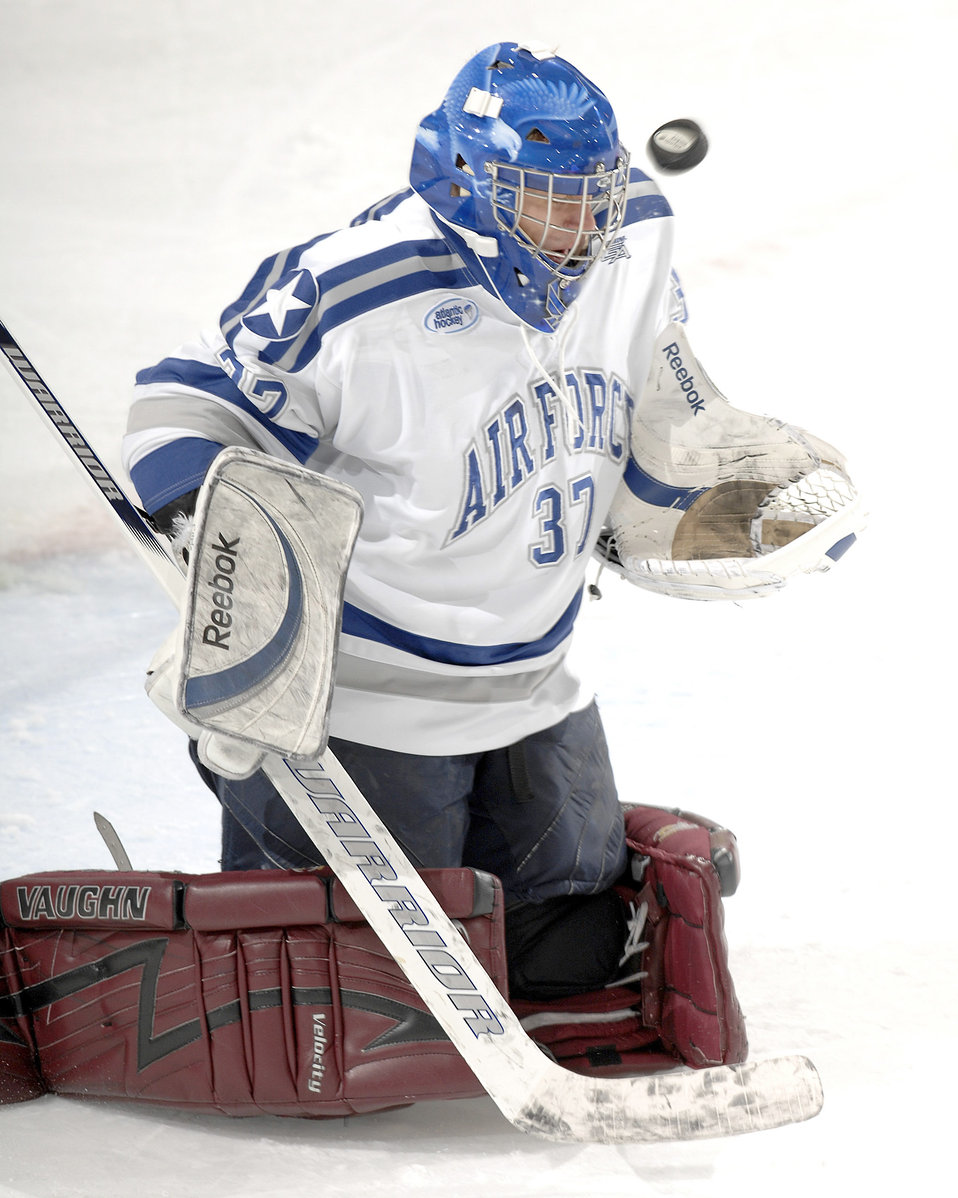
Falcons defeat the Pronghorns

Falcon sophomore Stephen Caple deflects a shot during a hockey exhibition game against the Canadian University of Lethbridge Oct. 4, 2010, at the U.S. Air Force Academy's Cadet Ice Arena in Colorado Springs, Colo. Caple made seven saves while allowing three goals as the Falcons defeated the Pronghorns 4-3 in overtime.